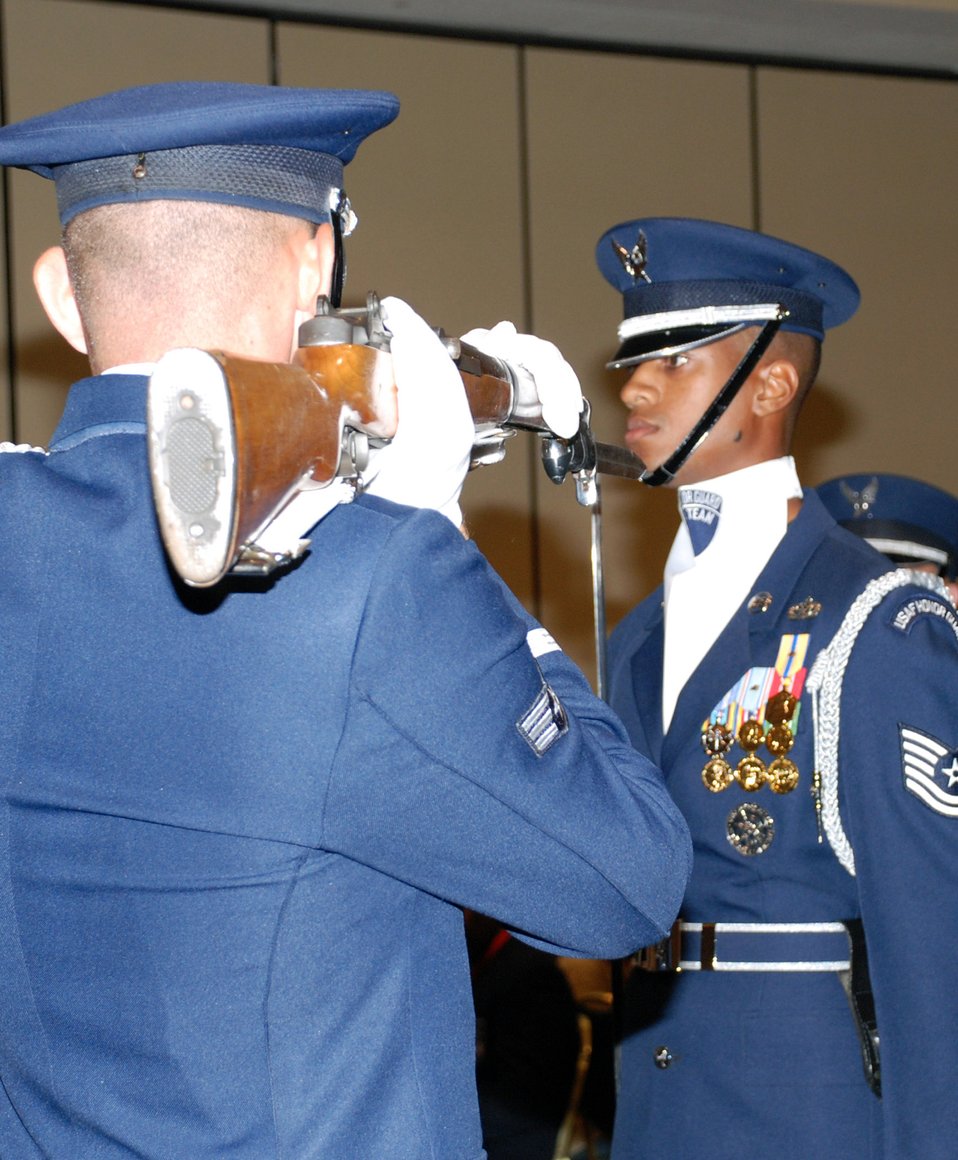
Servicemembers honored at Tuskegee Airmen convention

The Air Force Honor Guard drill team performs during the military luncheon at the 37th Annual Tuskegee Airmen National Convention July 18 in Philadelphia. The luncheon honored the Tuskegee Airmen, who overcame racial discrimination within the military, and Airmen currently serving. The luncheon culminated with the presentation of military awards to Airmen who exhibit outstanding performance in both professional and community service.